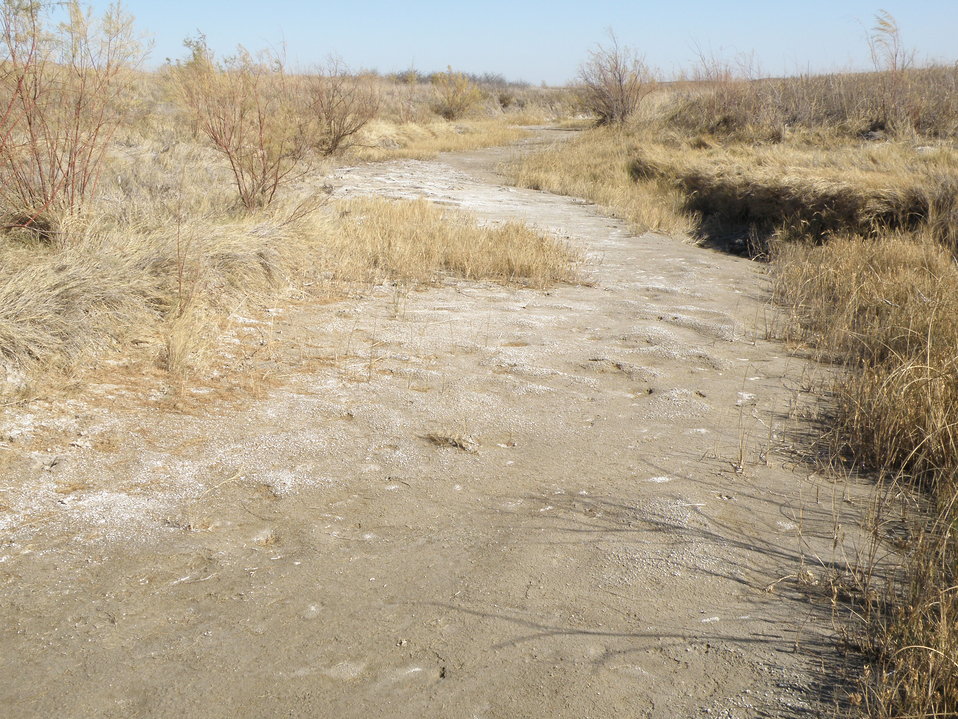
Dry creek bed, Quivira Refuge

A dry creek bed at Quivira National Wildlife Refuge in Kansas in November 2012 testifies to the area's severe drought. The dry creek channel is near the confluence of Salt Creek and Rattlesnake Creek, northeast of Big Salt Marsh.